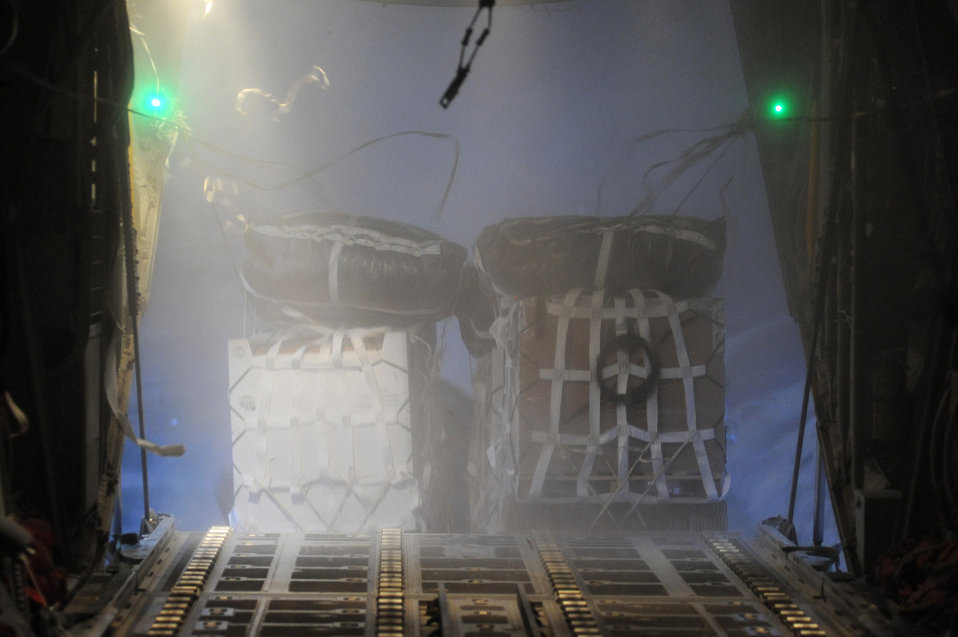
2010 Airdrop Record

A C-130J Hercules from the 772nd Expeditionary Airlift Squadron releases 16 container delivery system bundles Oct 7, 2010, for a remote, forward-operating base in Afghanistan. The supplies delivered will replenish ground forces with water, food and supplies needed to help sustain their living conditions.